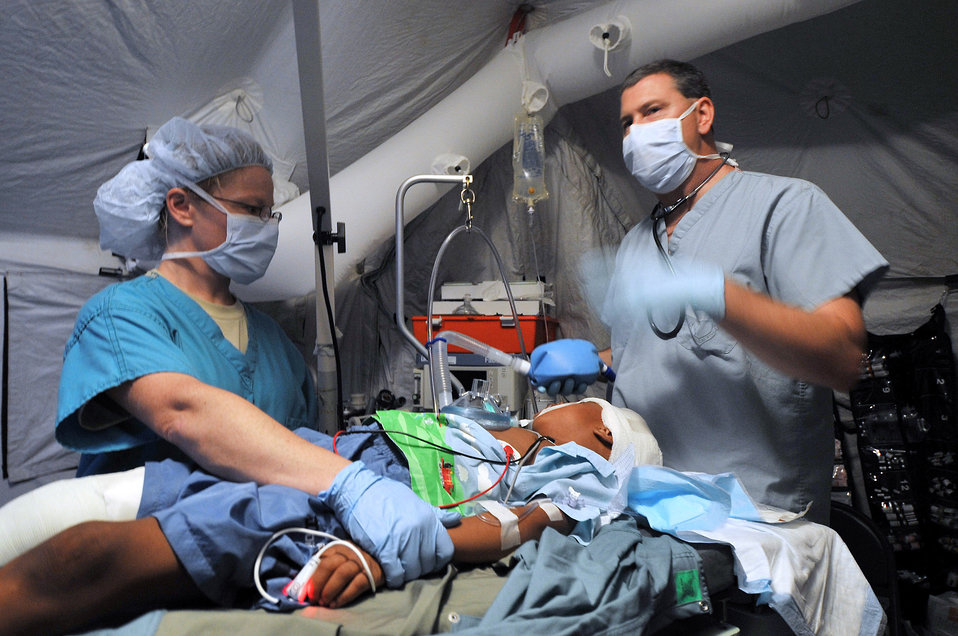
Medical team on the go

Capt. Elberta Carter, an operating room nurse, and Lt. Col. Ken Williams, a nurse anesthetist, care for a five-year-old Haitian boy Jan. 20, 2010, in Carrefour, Haiti. The boy was treated for a head wound and leg fracture. Both Airmen are members of Joint Team Bravo's medical element.